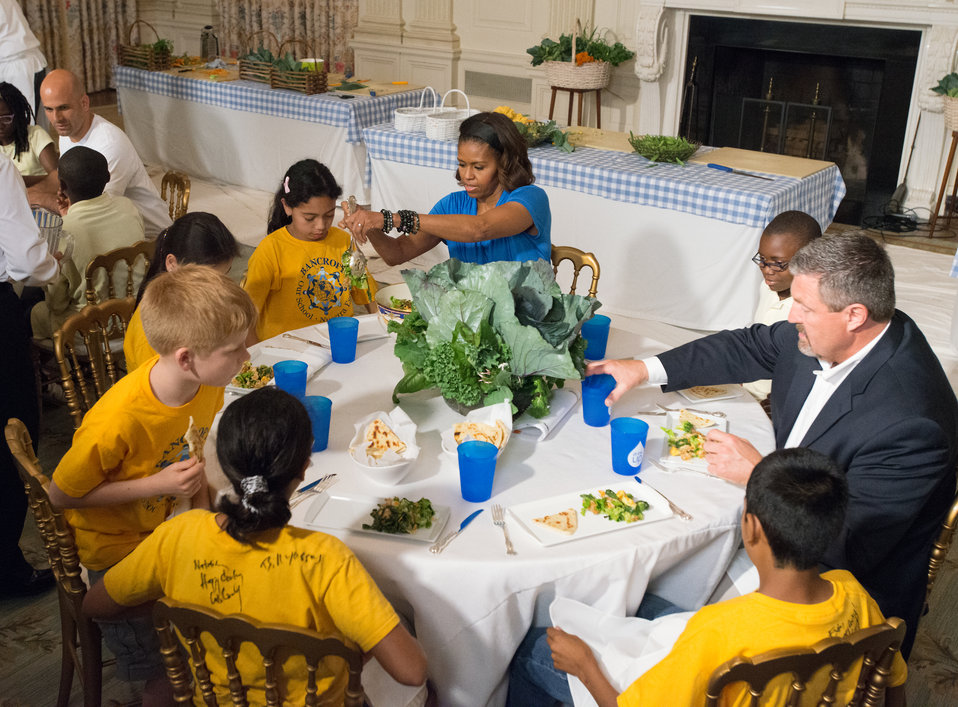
First Lady Michelle Obama and West Virginia Department of Education Office of Child Nutrition Executive Director Richard Goff have lunch with Washington, D.C. students from Cleveland Elementary School, Friendship Public Charter School, Kimball Elementary School, Bancroft Elementary School, and Harriet Tubman Elementary School in the State Dining Room of the White House in Washington, D.C. on Thursday, Jun. 12, 2014. The students, who helped plant the garden in the spring, made lunch from this year’s summer crop with the help of White House chefs and visiting school nutrition directors from Orlando, FL, Dallas, TX, and West Virginia.